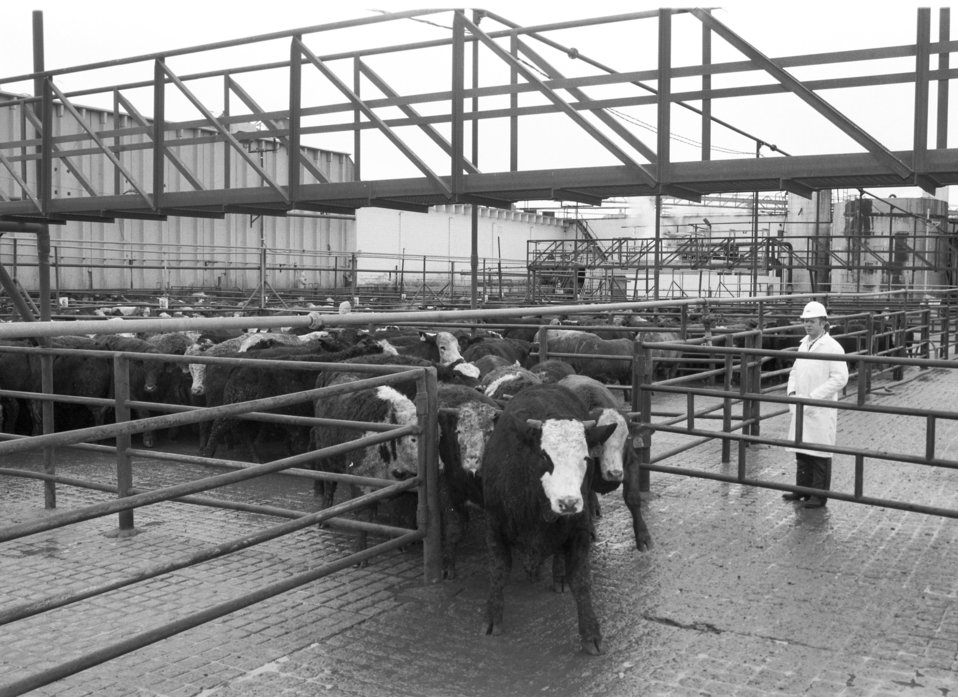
U.S. Department of Agriculture (USDA) Food Safety Inspection Service (FSIS) inspectors examine cattle at a processing plant in Plainview, TX on January 22, 1991.